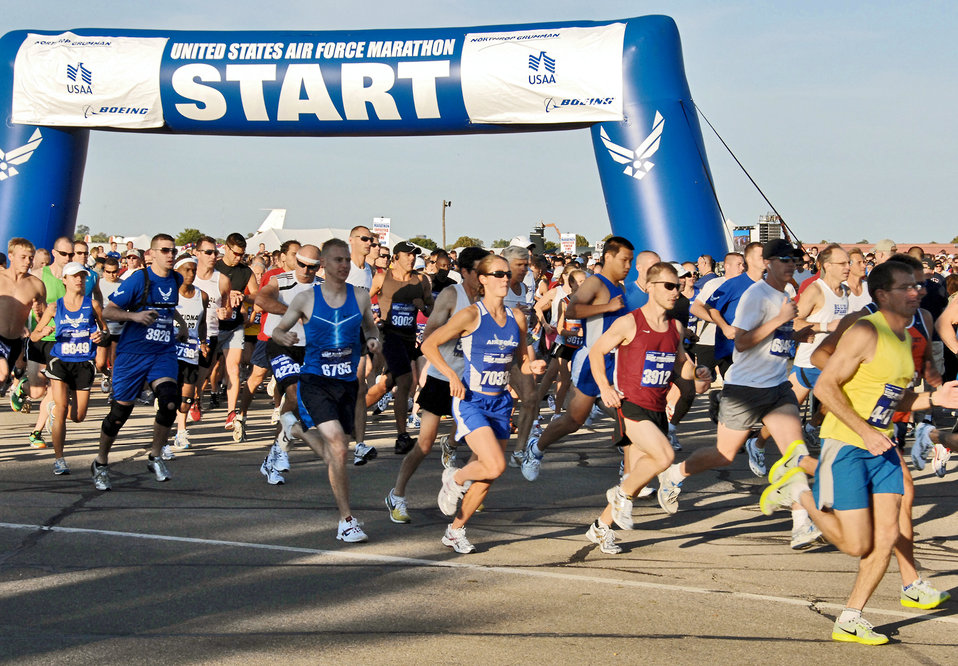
Full house for this year's marathon

More than 3,800 runners start the half marathon last year at Wright-Patterson Air Force Base, Ohio. For the first time, the 2010 Air Force Marathon is maxed out for the full and half marathon.